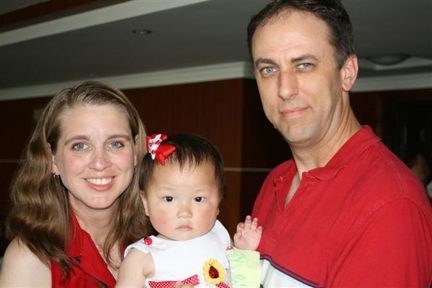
Bringing Sarah home

Master Sgt. Allen and Dawn Orahood enjoy their time in China with their newly adopted daughter Sarah AlisonMei Orahood. As part of the adoption process, the Orahoods spent two weeks in Sarah's birth country. Sergeant Orahood is assigned to the 52nd Maintenance Group at Spangdahlem Air Base, Germany.